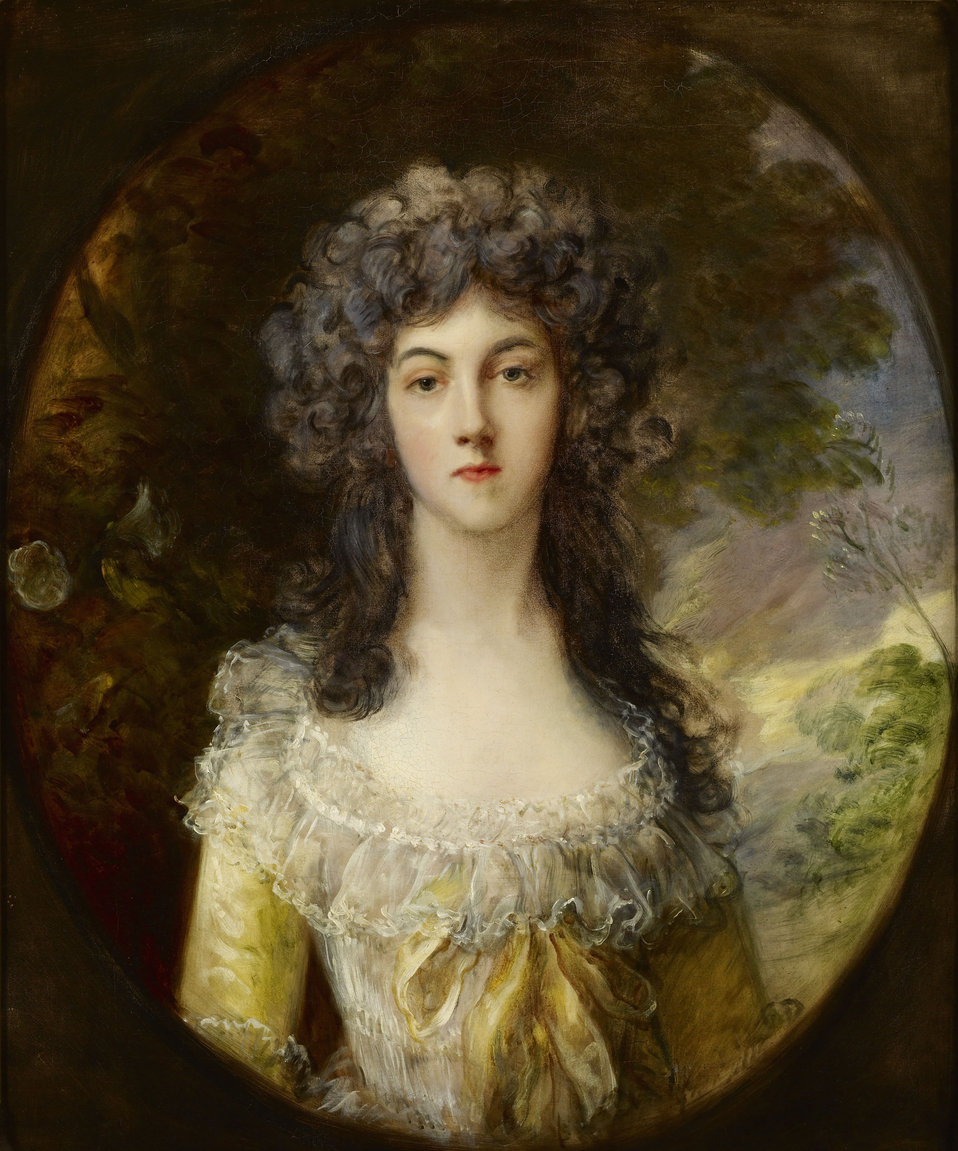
Mrs. Charles Hatchett - Gainsborough c. 1786